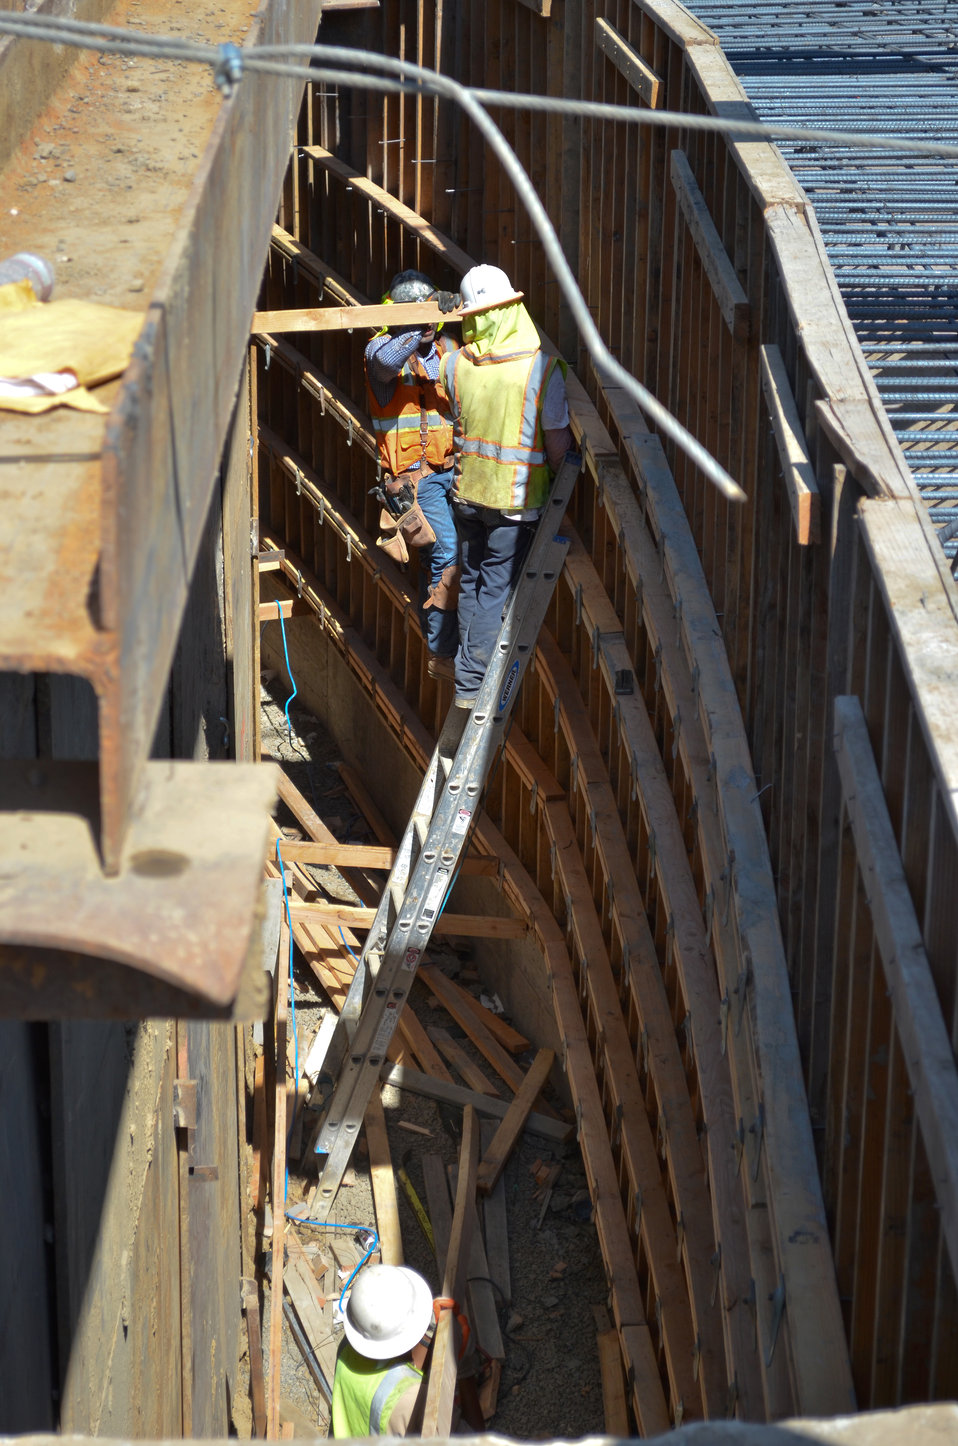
Workers frame the outside wall of two box culverts

Construction workers frame the outside wall of two box culverts along Napa Creek in Napa, Calif., July 10, 2012 ahead of the final placement of concrete. The culverts will help route water from the creek to Napa River during high water. The $14.8-million flood risk reduction and habitat restoration project is funded by the American Recovery and Reinvestment Act of 2009 and is a joint effort by the U.S. Army Corps of Engineers Sacramento District, the city of Napa and the Napa Flood Control and Water Conservation District.